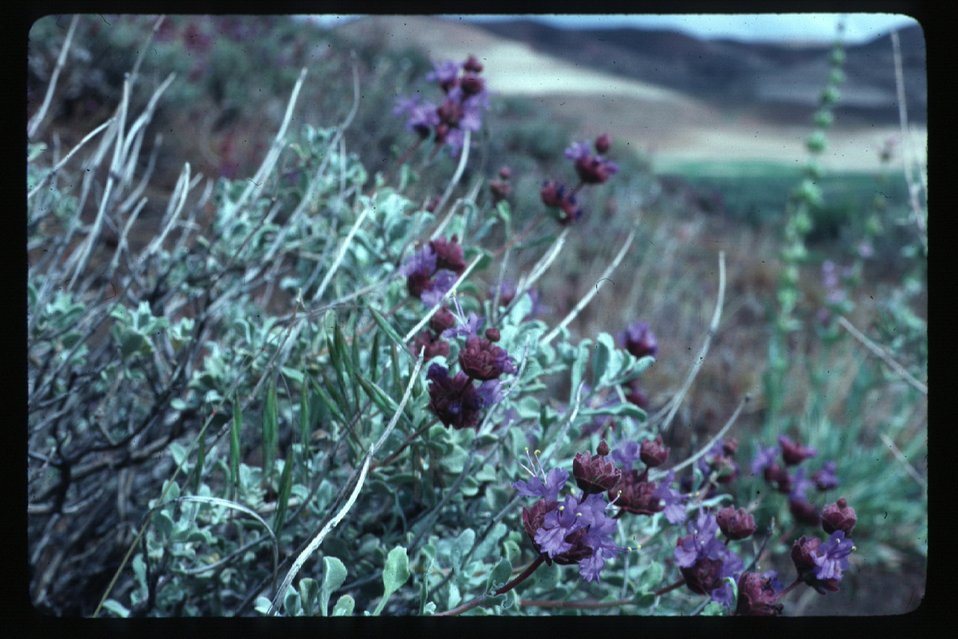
Salvia Brush, grasses Wildflowers